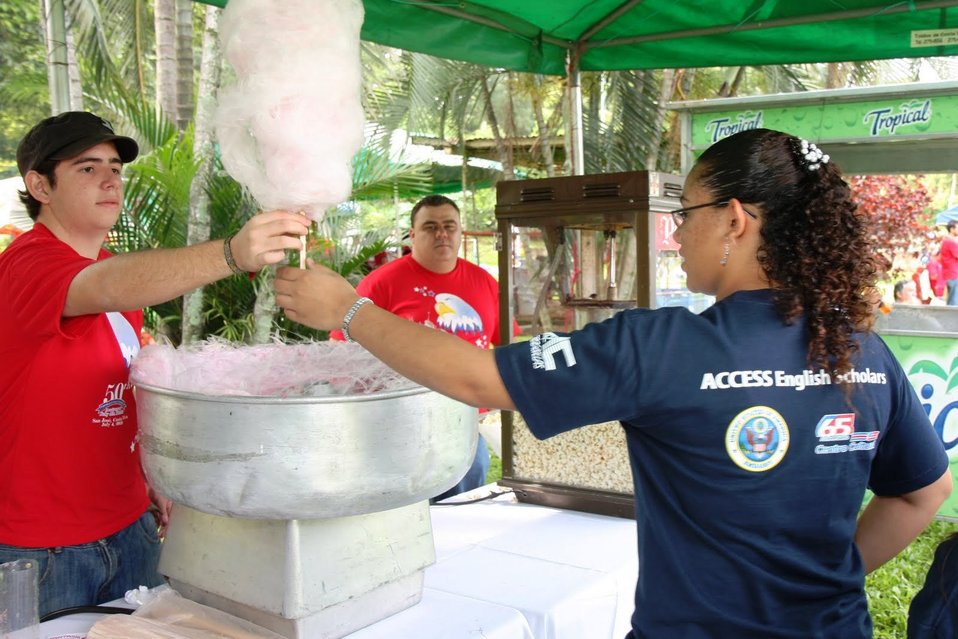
Students Enjoy Cotton Candy

Students from U.S. Embassy San Jose in Costa Rica's English Access Microscholarship Program enjoy cotton candy during the U.S. Independence Day celebration on July 2, 2010, in San Jose, Costa Rica.